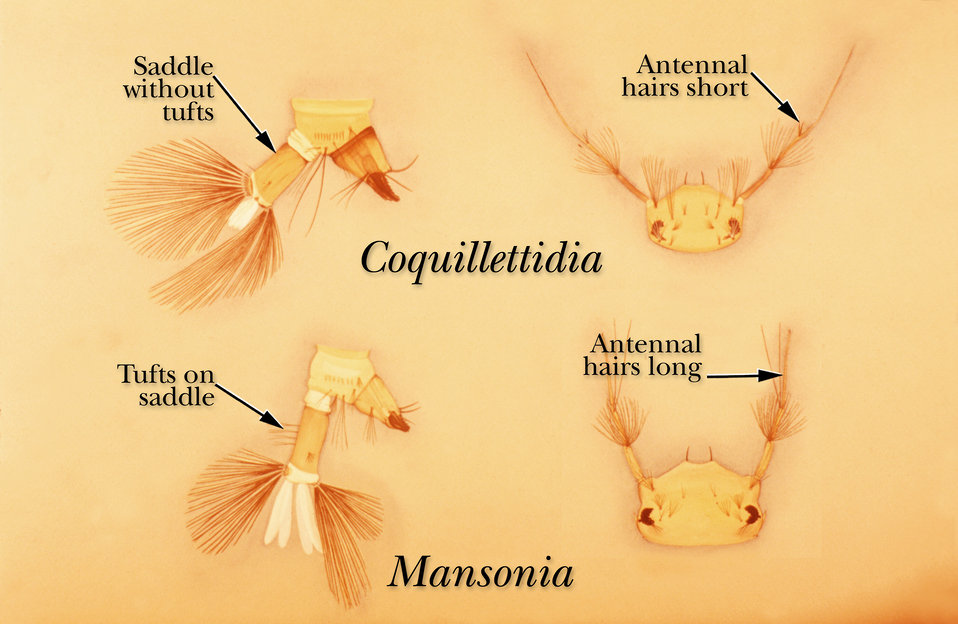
An illustration of Coquillettida and Mansonia mosquito larvae identifying their distinguishing structures.